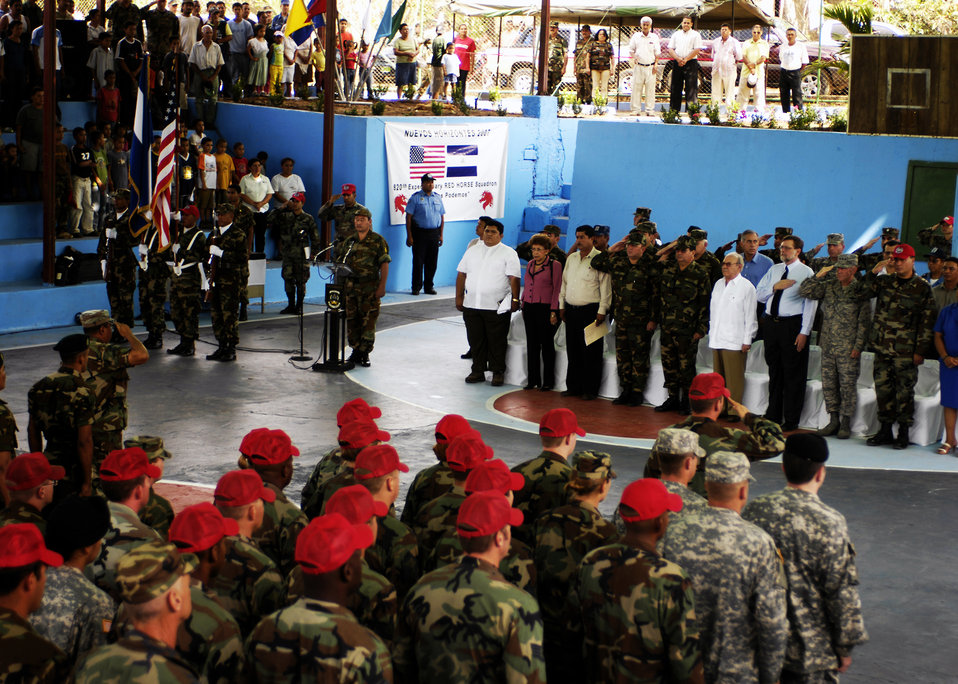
New Horizons Nicaragua 2007 closes out with ceremony

New Horizons - Nicaragua 2007 closing ceremony attendants render courtesies to the United States and Nicaraguan flags April 27. The ceremony concluded the $7.5 million joint humanitarian and training exercise, during which 250 Airmen, Soldiers and Marines built a three-room school and a five-room medical clinic and treated more than 20,000 Nicaraguan medical patients.